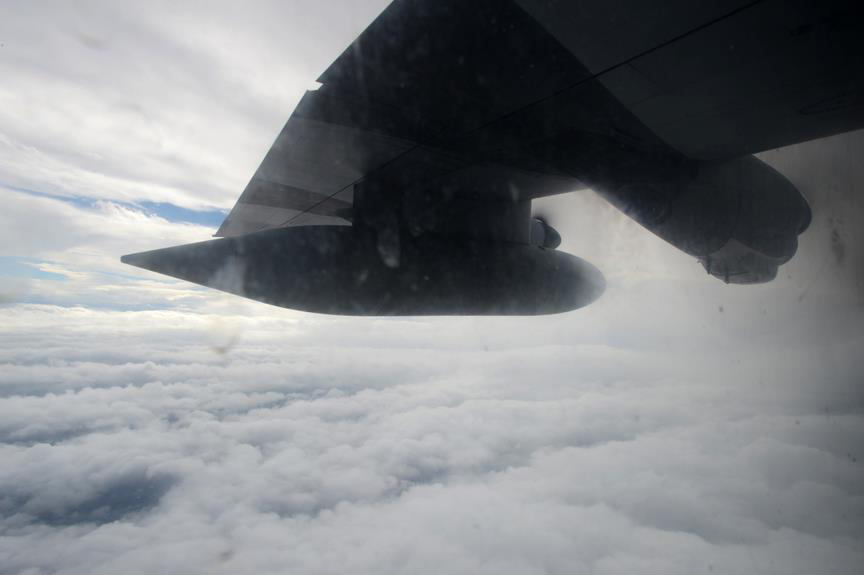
Hurricane Sandy

A WC-130J Hercules, from the 53rd Weather Reconnaissance Squadron, flies into Hurricane Sandy Oct. 29, 2012, somewhere over the Eastern coastline of the United States.